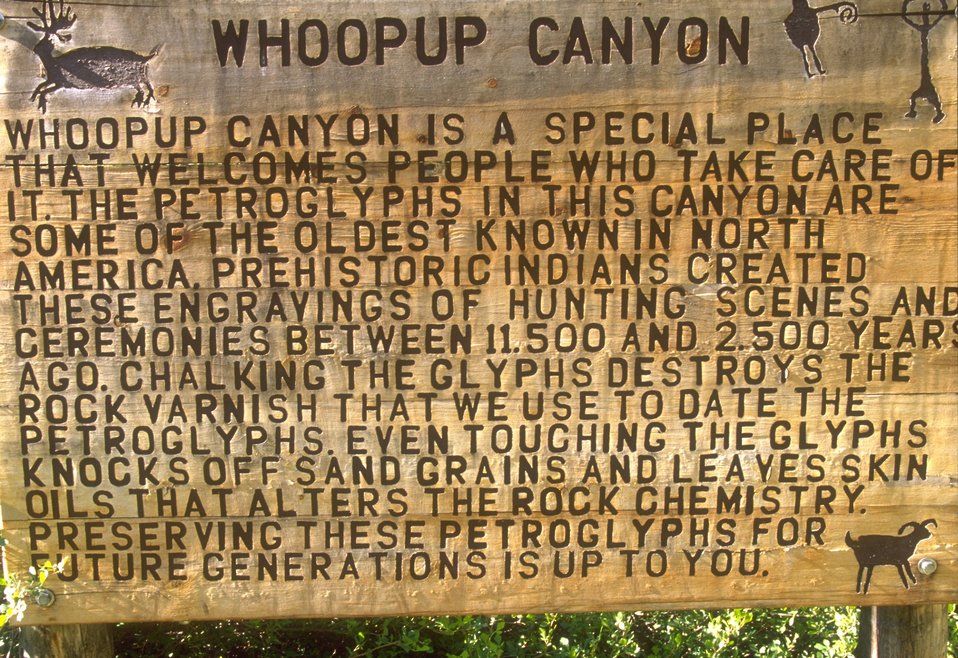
Whoopup Canyon Sign, Newcastle Field Office.